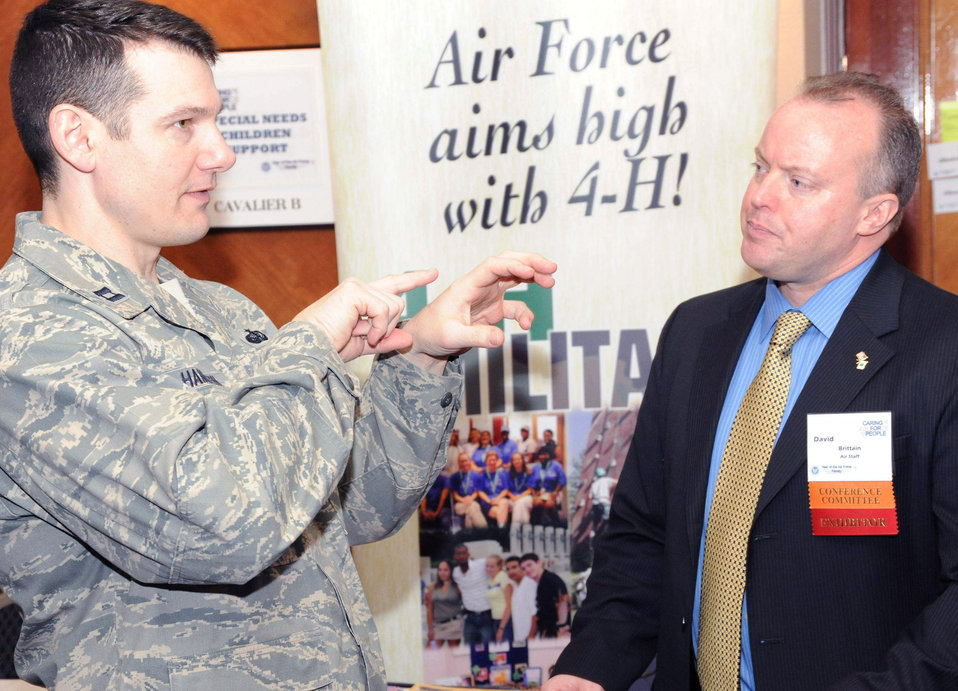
Air Force officials hold Caring for People Forum

Captain Charles Hamilton speaks with David Brittian about 4-H opportunities offered to military youth during the Year of the Air Force Family: Caring for People Forum April 1 at Arlington, Va. Mr. Brittian said 4-H offers opportunities at Air Force bases worldwide and can be found at base youth centers or with school-age programs. Mr. Brittian is a youth development specialist with North Carolina State University. Captain Hamilton is the deputy chief of future operations at the Pentagon Services Division in Arlington.